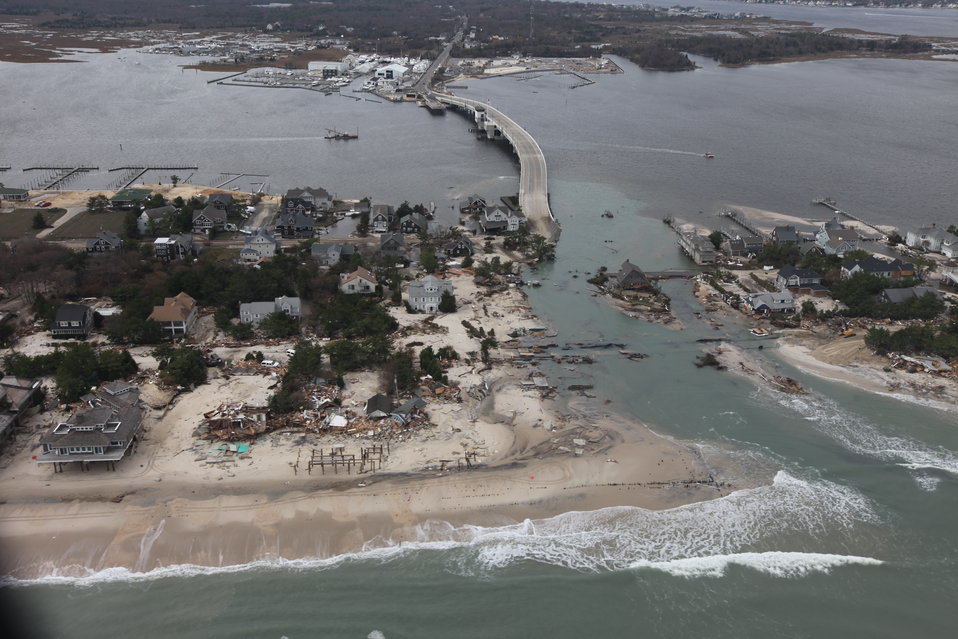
Storm damage along the New Jersey coast

Aerial photo of Mantoloking, New Jersey after Hurricane Sandy.